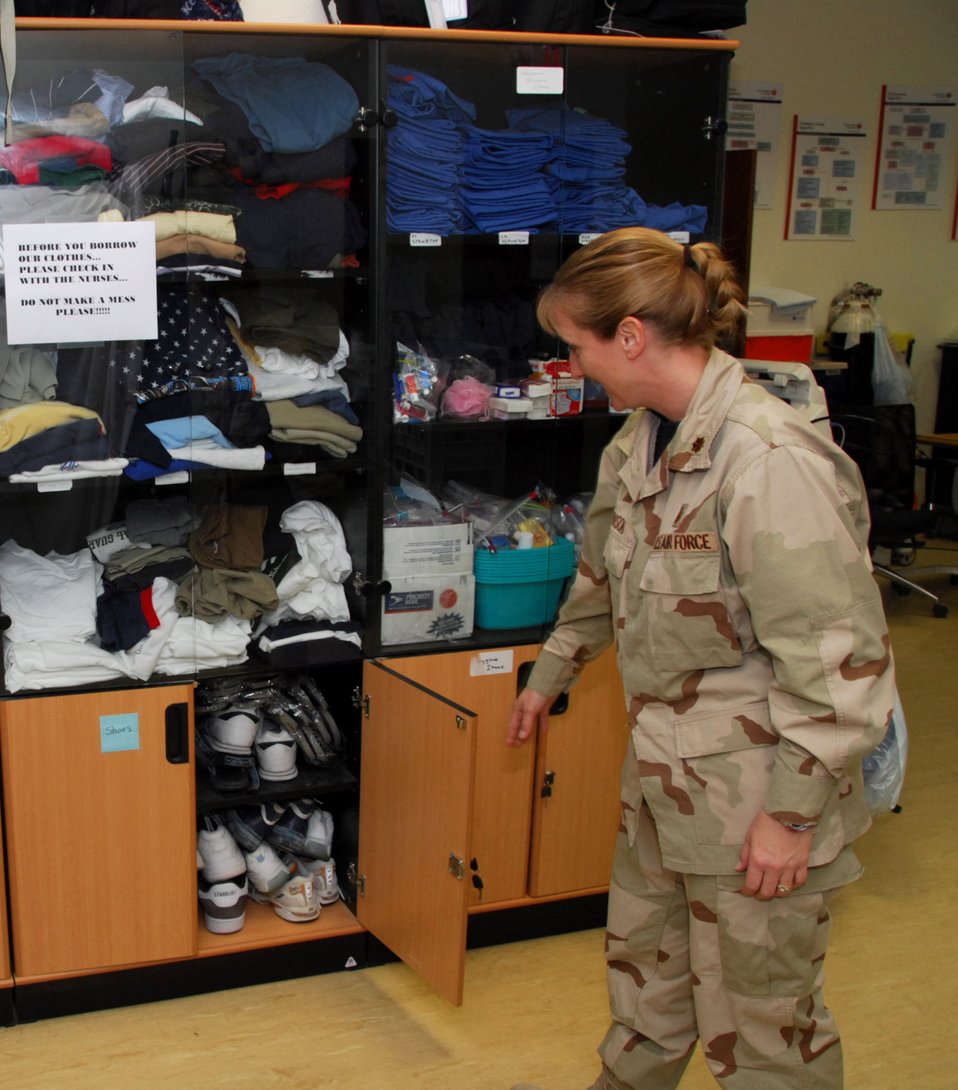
Warriors with mild to moderate injuries staying near the fight

Maj. Nancy Johnson shows off many of the donations made to the Wounded Warrior Wingman program Nov. 12 at the 379th Expeditionary Medical Group in Southwest Asia. Servicemembers are often evacuated without their gear and personal items and arrive at the 379th EMDG with just the clothes on their back. Donations include civilian clothes and toiletries such as shaving kits, toothbrushes, toothpaste, deodorant, soap, shampoo and towels.